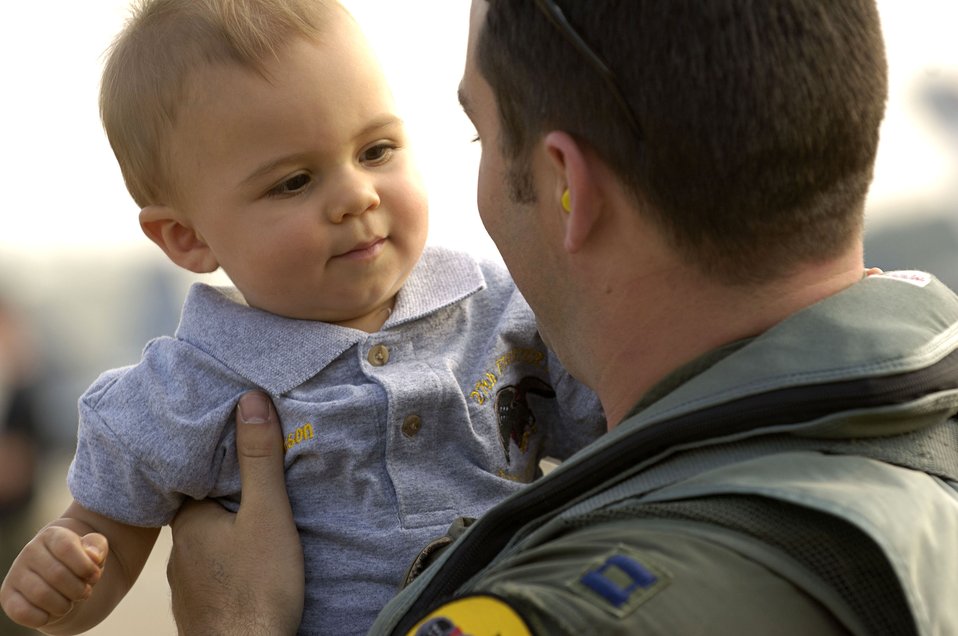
Raptors await return of roost

Capt. John Echols shares a moment with his son, Jackson, after arriving at Naval Air Station Oceana, Va., on Friday, June 30. The 27th Fighter Squadron, along with the 71st and 94th FS from Langley Air Force Base, Va., are flying sorties from other installations because of runway repairs at their home station. Captain Echols, who just returned from Elmendorf AFB, Alaska, is an F-22 Raptor pilot assigned to the 27th FS.